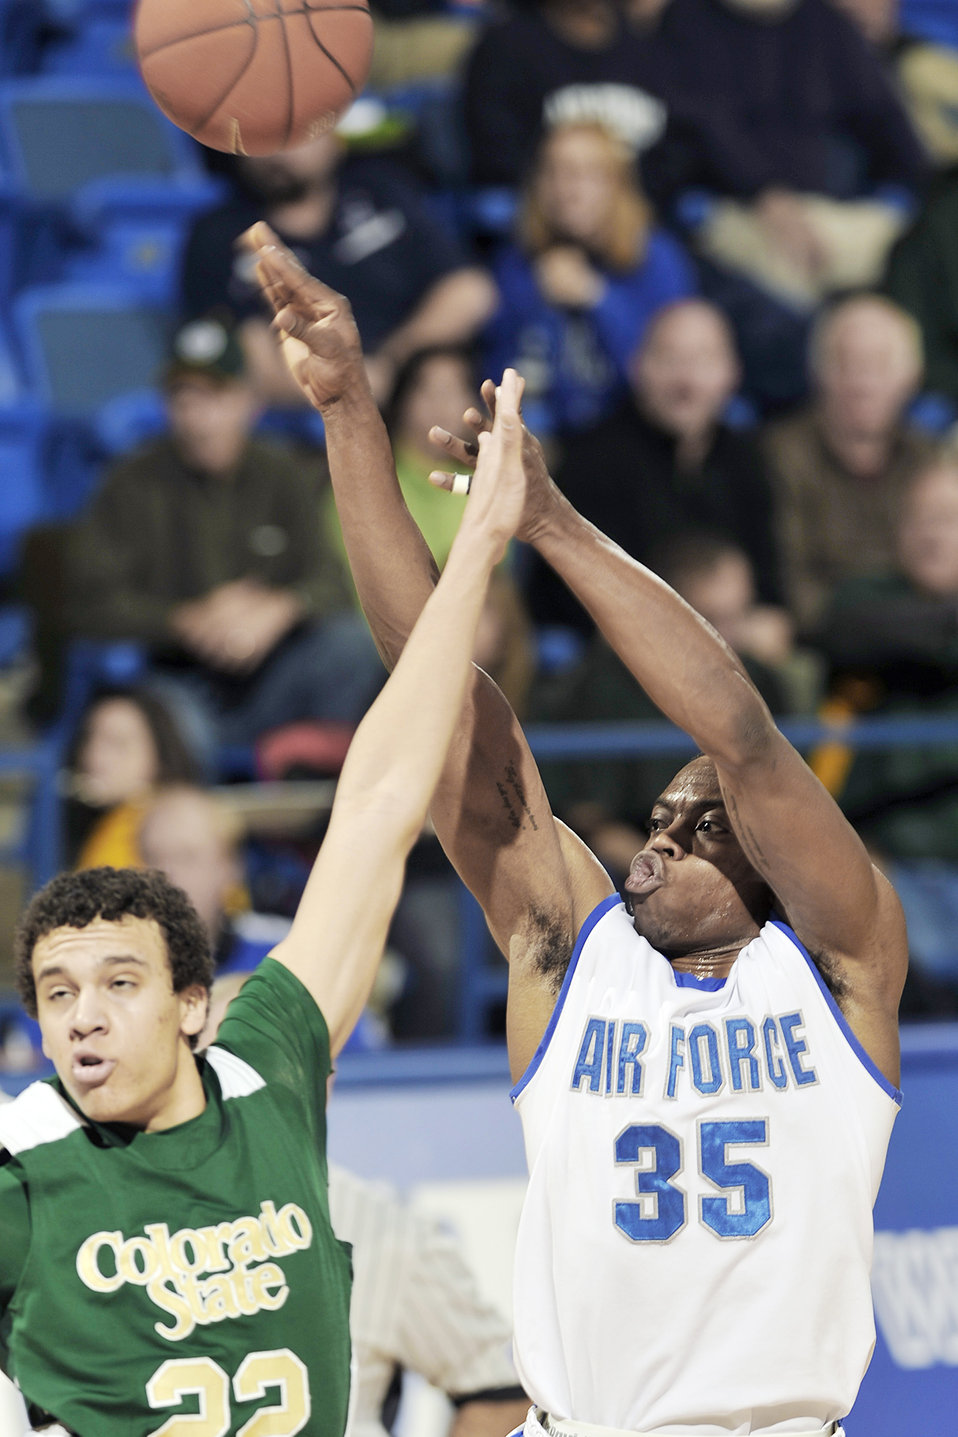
Colorado State beat Falcons

Falcon junior guard Evan Washington's game-tying 3-point attempt with five seconds left came up short as Colorado State beat Air Force 51-47 in front of about 1,700 people at the U.S. Air Force Academy's Clune Arena Feb. 9, 2010. The Falcons are 9-14 overall and 1-9 in the Mountain West Conference.